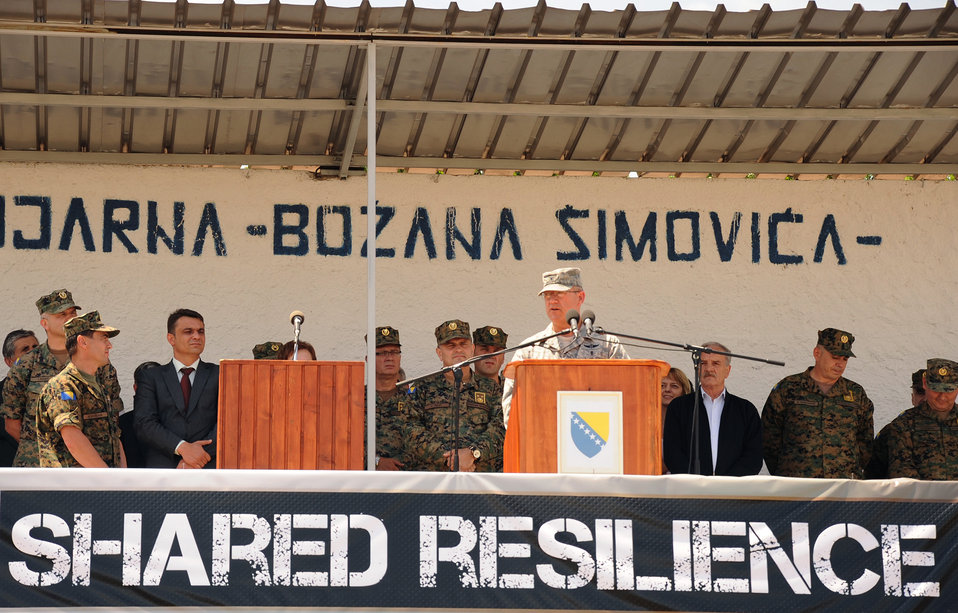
Multinational medical exercise readies forces

U.S. Air Force Col. Robert Marks, the Shared Resilience 2012 co-director, addresses ceremony attendees during the exercise’s opening ceremony at Capljina, Bosnia and Herzegovina, May 28, 2012. The exercise, in the spirit of partnership for peace, directly supports U.S. European Command's theater cooperation efforts and strategy for active security with European countries.